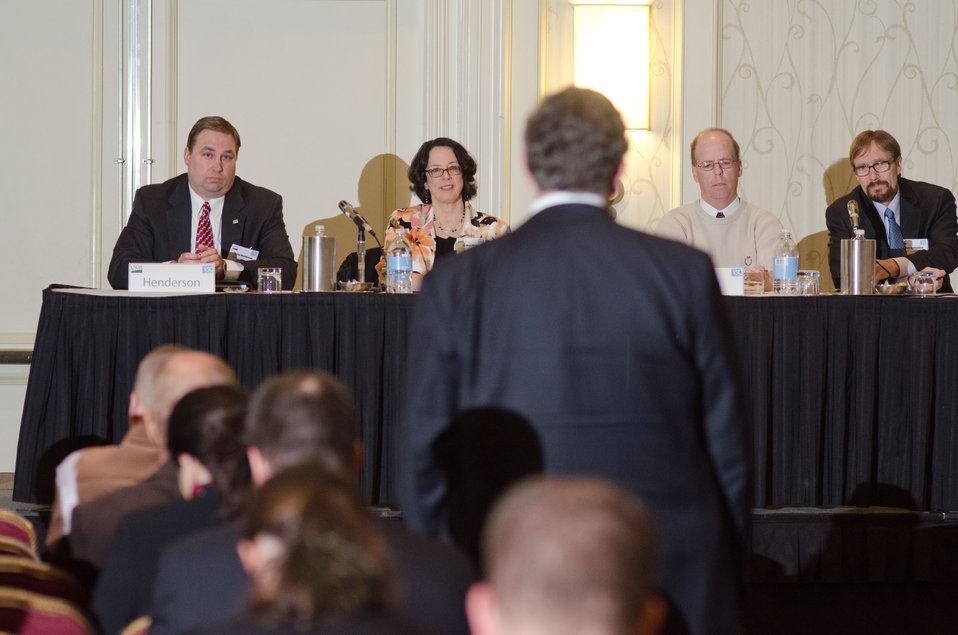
A question is presented to the panel of speakers (left – right) Federal Reserve Bank of Kansas City Omaha Branch Executive Vice President Jason Henderson, Agriculture Economic Research Service Economists Mary Ahearn and Timothy Park; and World Perspectives, Inc. President and moderator Gary Blumenthal, during “The Farm Income Outlook for 2012” session of the Food Prices & Farm Income Track, at the 2012 Agricultural Outlook Forum, “Moving Agriculture Forward, Growing, Innovating and Celebrating 150 Years.” held at the Crystal Gateway Marriott Hotel, Arlington, Virginia, Friday, February 24, 2012. The session focused on general measures of the financial well being of the farm economy, including USDA’s official outlook for farm income, the distribution of income across farm households, and the competitiveness of the rural economy.